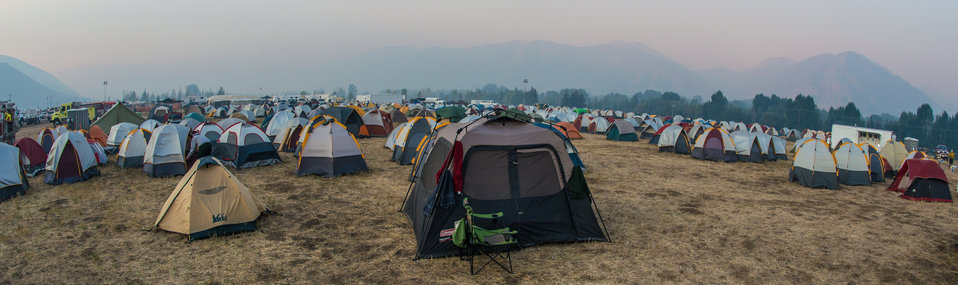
Pre-dawn light shows the smoke that has come into the Incident Command Post campgrounds in Hailey, ID, on Tuesday, Aug 20, 2013. Wldlands firefighters have come from across the nation to fight the Beaver Creek Fire. The day shift are ready at their nearby vehicles (left), to begin their 12-hour work day. Add breakfast, dinner and transportation times, they face long days dedicated to fighting of this fire.